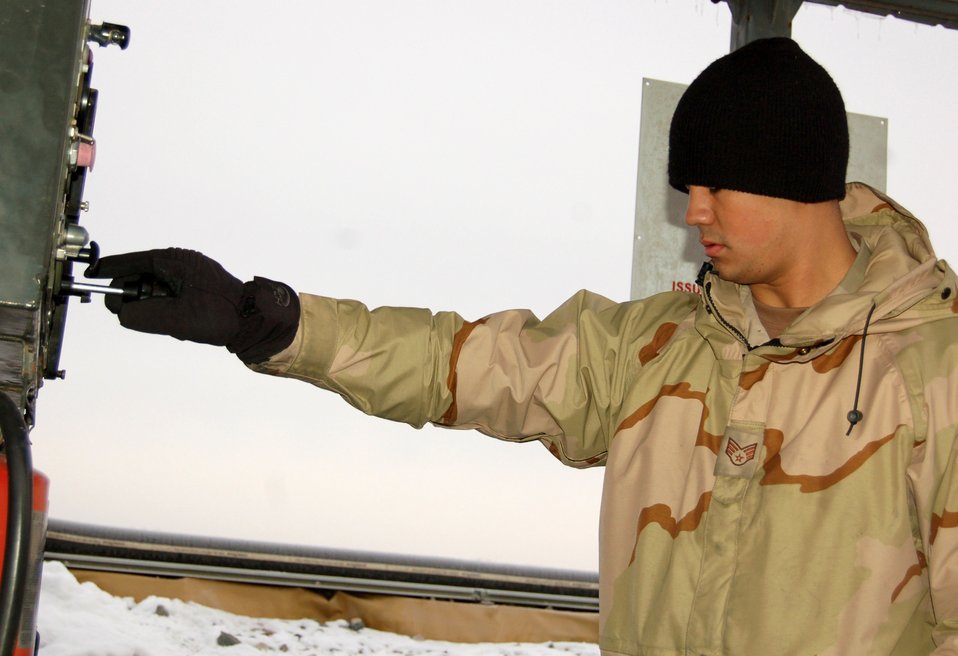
Record-setting fuels flight keeps gas flowing at Manas

Senior Airman Grady Tunnell adjusts the throttle on the pump at fill station No. 1 in the fuel storage yard Nov. 27 at Manas Air Base, Kyrgyzstan. The pump is used to push fuel into the R-11 fuel trucks at a rate of 450 gallons per minute. It can take up to 30 minutes to fill the 5,800 gallon R-11. Airman Tunnell is assigned to the 376th Expeditionary Logistics Readiness Squadron, Petroleum, Oils and Lubricants Flight and deployed from the 60th LRS at Travis Air Force Base, Calif.